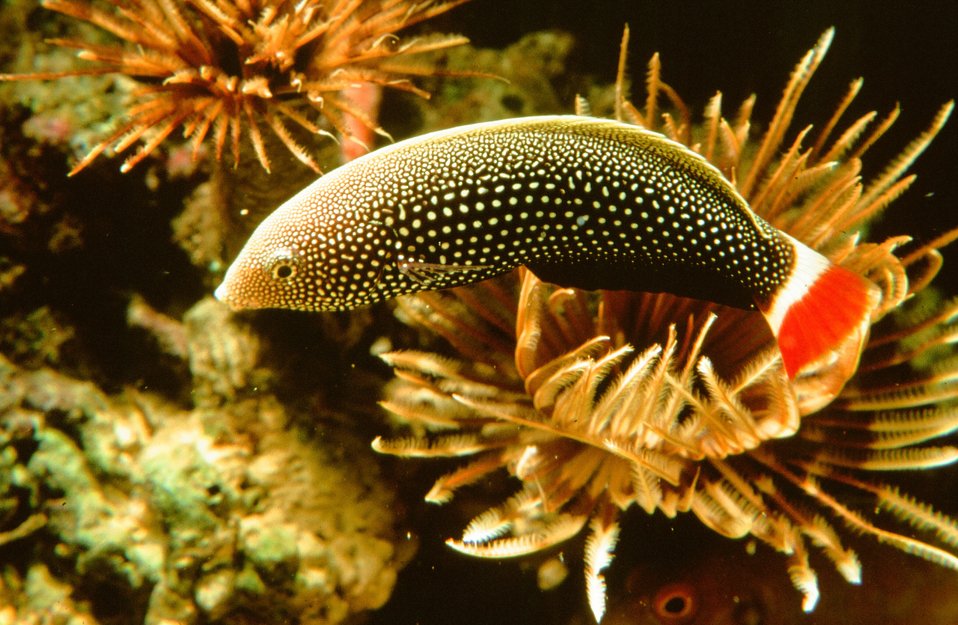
Red tailed wrasse in coral.